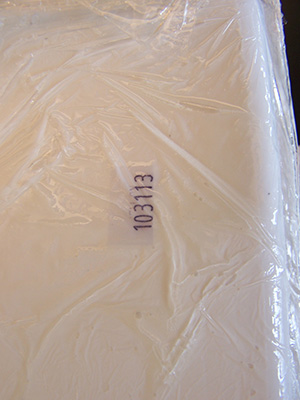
RECALLED – Herring fillets in oil

July 25, 2013 – Product Recall – Gold Star Smoked Fish Corp. Issues an Alert on Listeria in Rybacka Wies Brand Herring Fillets in Oil 'Matjes Sledz w oleju'.